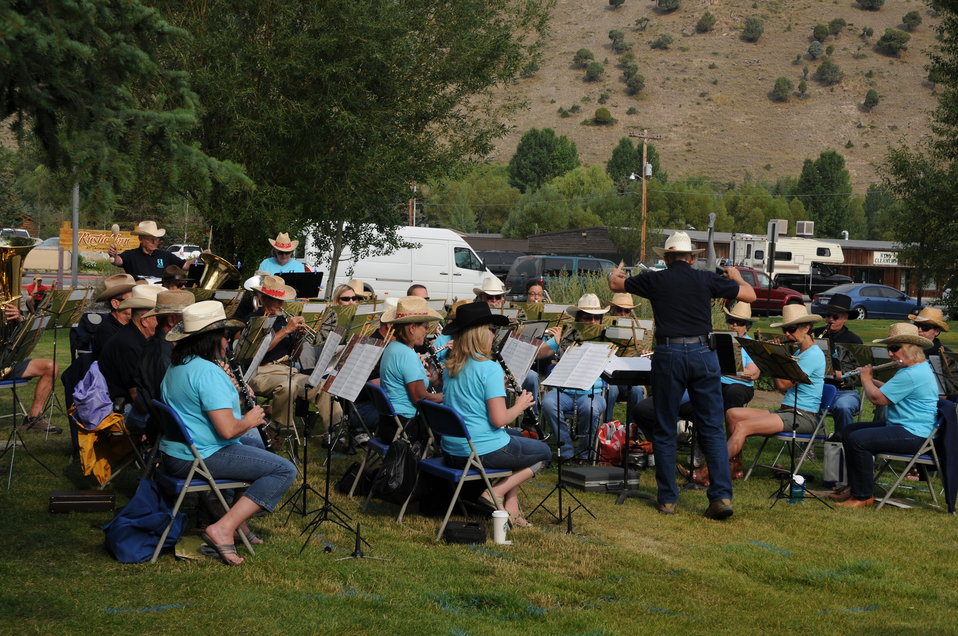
Music at the National Elk Refuge Centennial Ceremony

The Jackson Community Band played as guests arrived for the August 10 National Elk Refuge centennial ceremony. The day's conductor, Don Cushman, is a former Visitor Center Manager of the Jackson Hole & Greater Yellowstone Visitor Center on the National Elk Refuge. Don retired from the federal government in 2005.